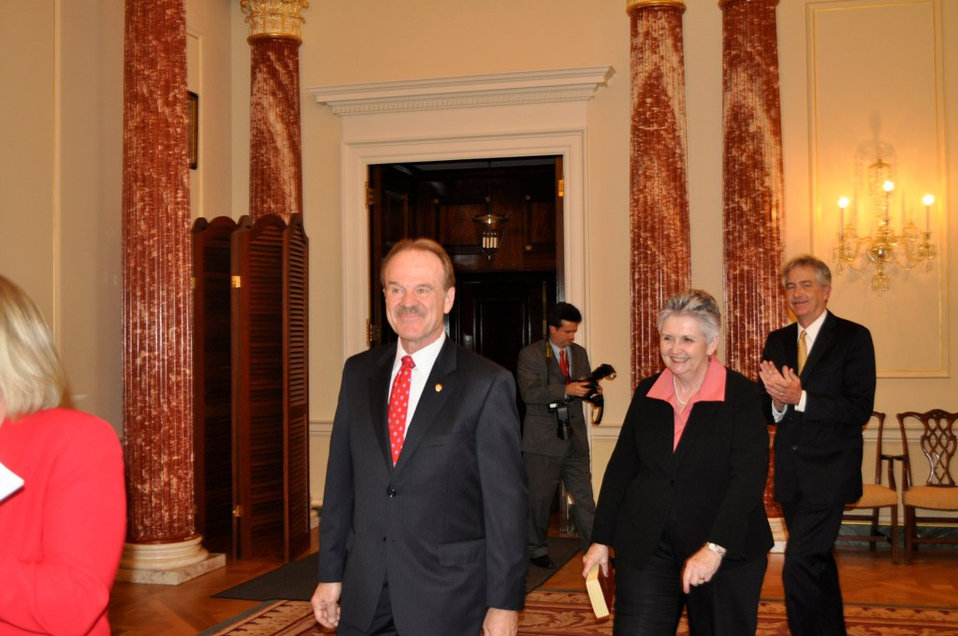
Dan Mozena Prepares To Officially Become the U.S. Ambassador to Bangladesh

Dan Mozena, accompanied by Ambassador Nancy J. Powell and Deputy Secretary of State William Burns, prepares to be sworn in as the U.S. Ambassador to Bangladesh at the U.S. Department of State in Washington, D.C., on November 7, 2011.